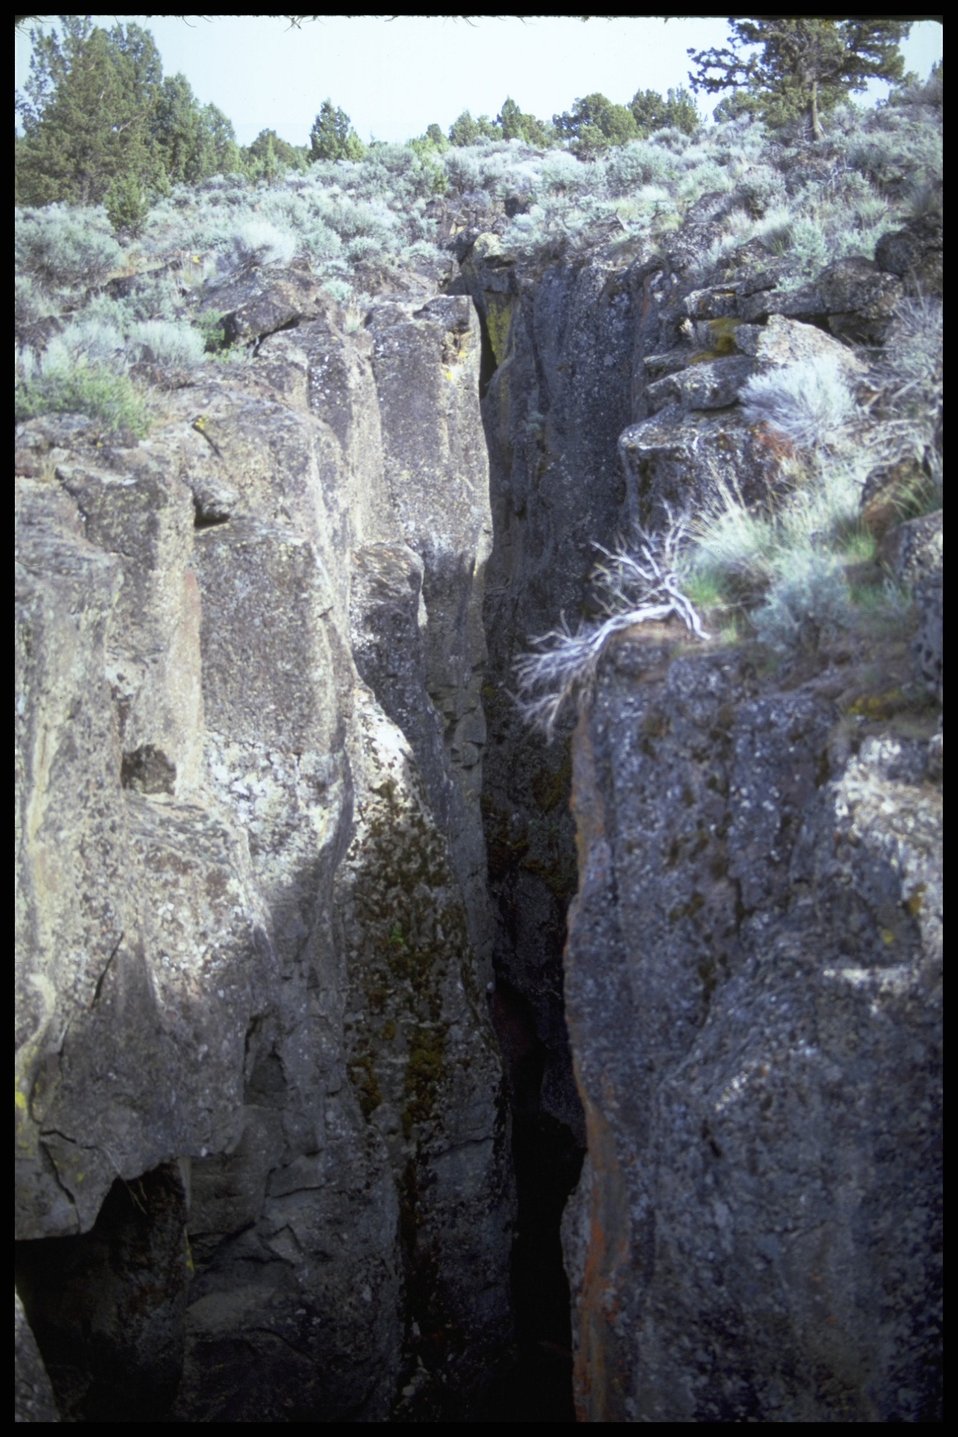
Scenic view of "Crack in the Ground", Lakeview District.